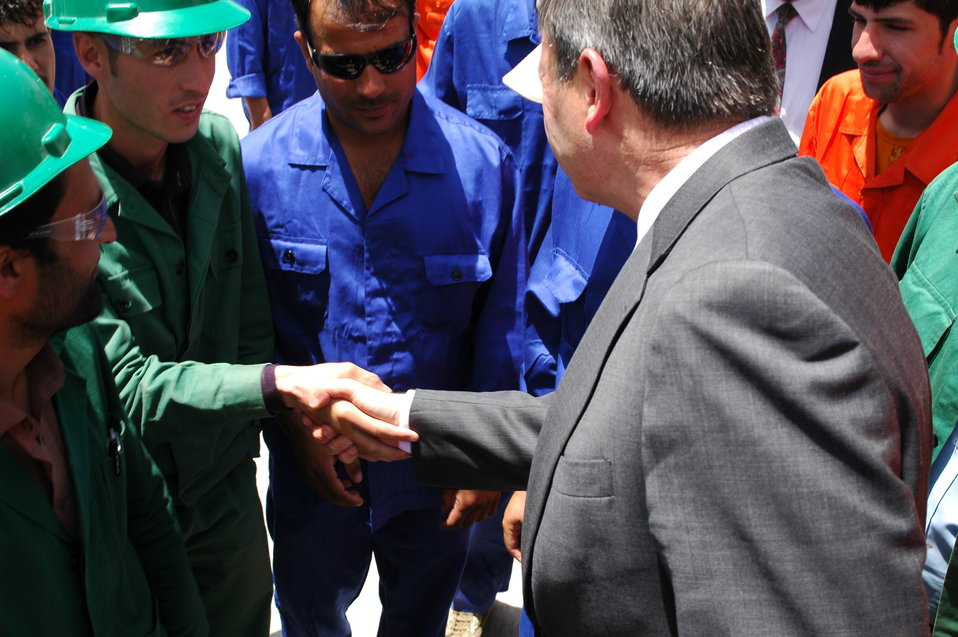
105 MW Tarakhil Power Plant Handover